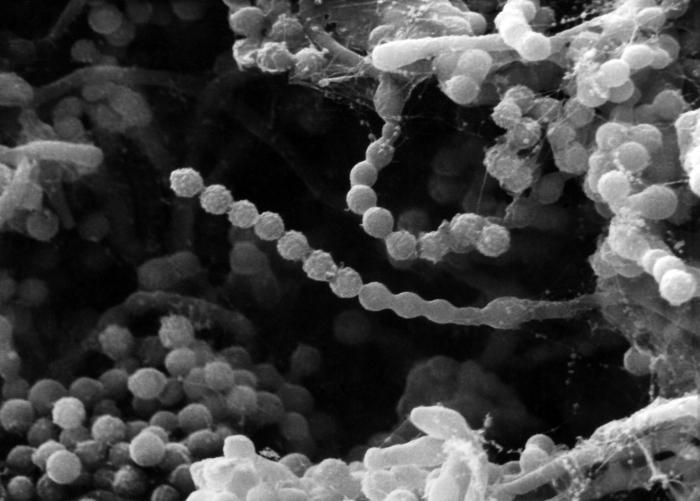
Scanning electron micrograph of Paecilomyces variotii fungal organisms.